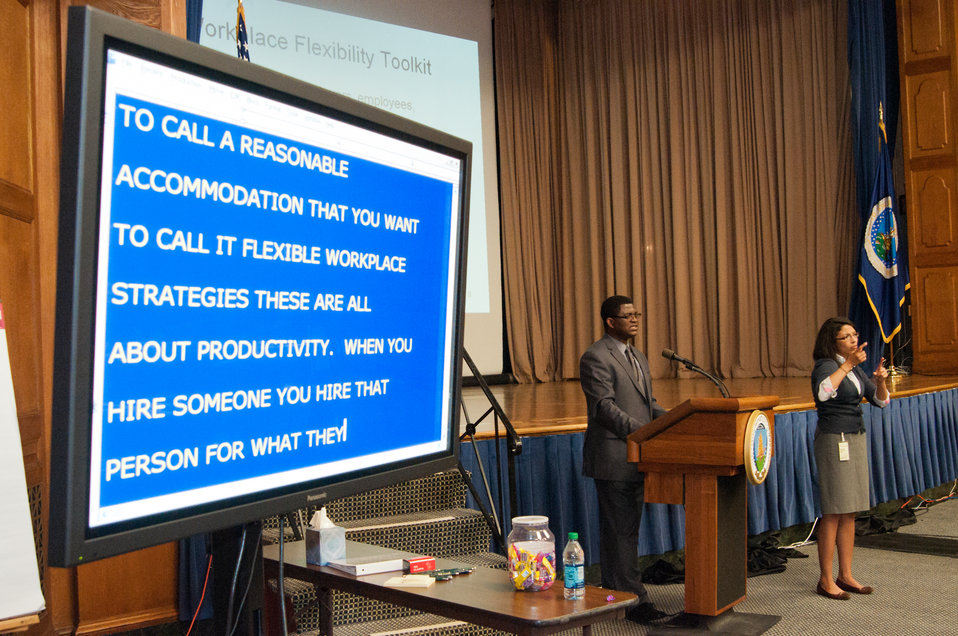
Department of Labor Office of Disability Employment Policy representative Akinyemi Banjo discusses Federal wide resources available to disability employment program managers at the U.S. Department of Agriculture (USDA) Office of Human Resources Management (OHRM) Disability Employment Program Team Training at USDA in Washington, D.C. on Tuesday, May14, 2013. Olivia Battle interprets for hearing-impaired employees during the event. The monitor in the background shows the Communication Access Real Time (CART) System used to communicate to hearing impaired employees.